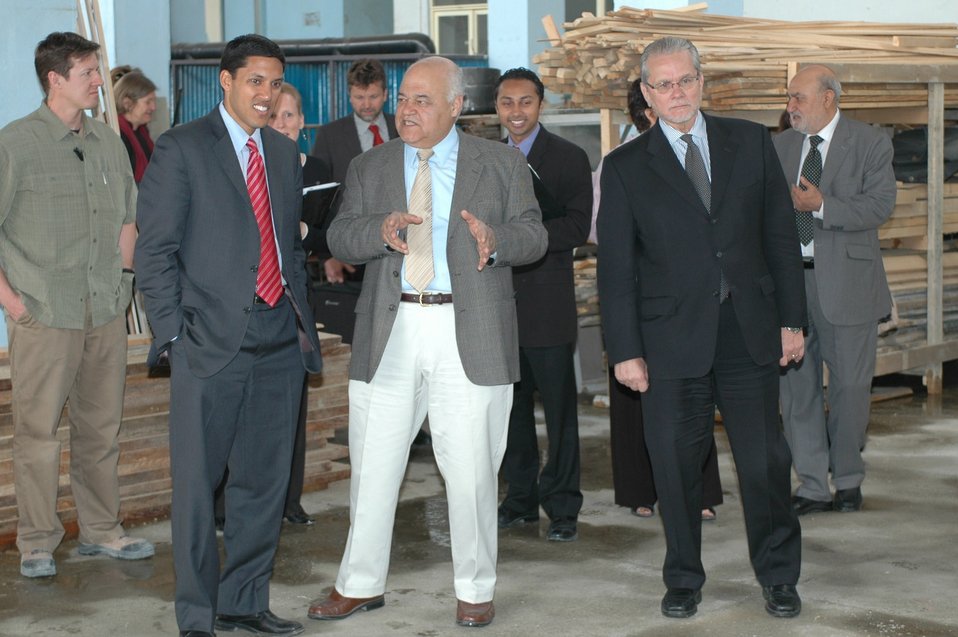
Dr Shah Visits Votech in Kabul